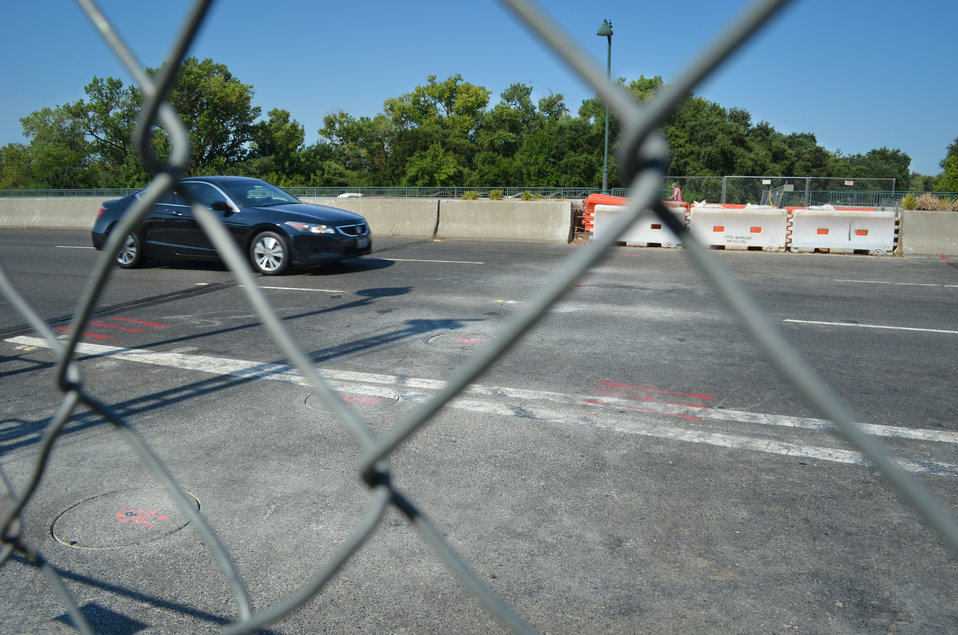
Boreholes marked with pink paint stretch across the Watt Avenue bridge in Sacramento, Calif., shown July 25, 2013. The holes provide access through the bridge to the levee beneath, where the U.S. Army Corps of Engineers Sacramento District will install a seepage cutoff wall.